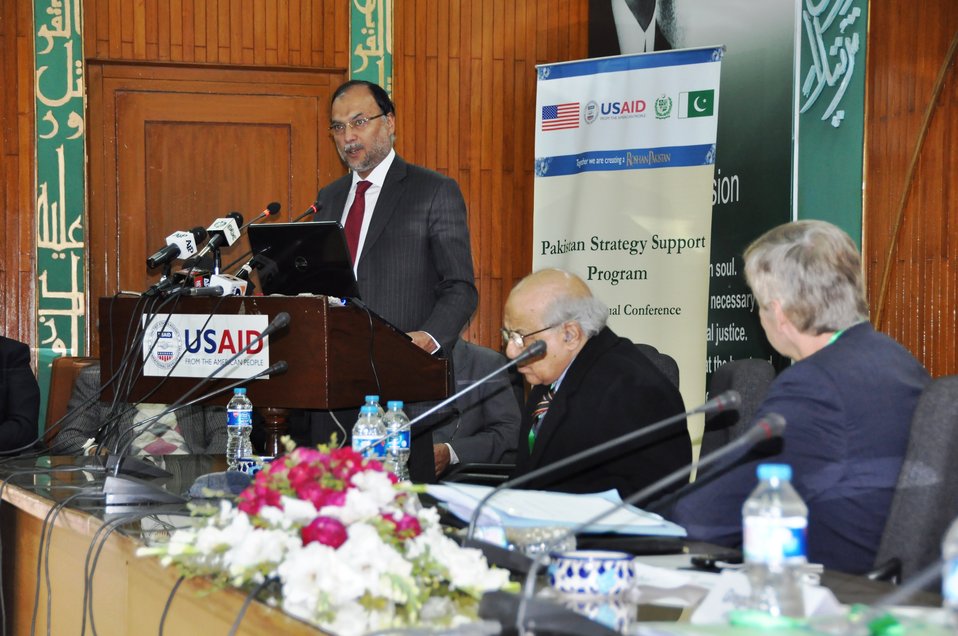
Jan 21, 2014- PSSP Event in Islamabad

Prof. Ahsan Iqbal, Federal Minister for Planning, Development and Reforms and Deputy Chairman of the Planning Commission while addressing the participants at the event.